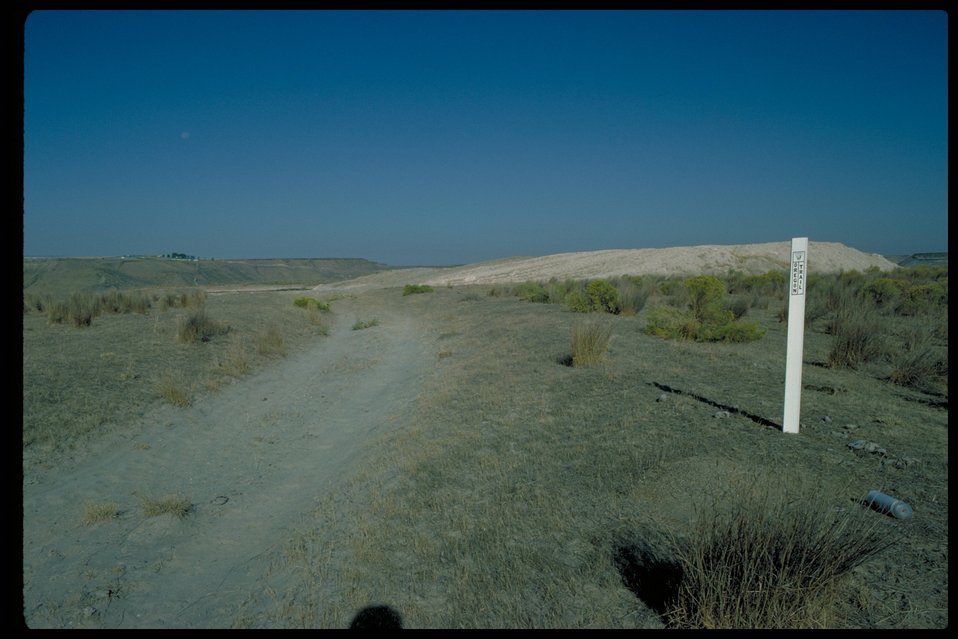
Gravel Pit across Oregon Trail south of Three Island Oregon Trail Lower Snake River District